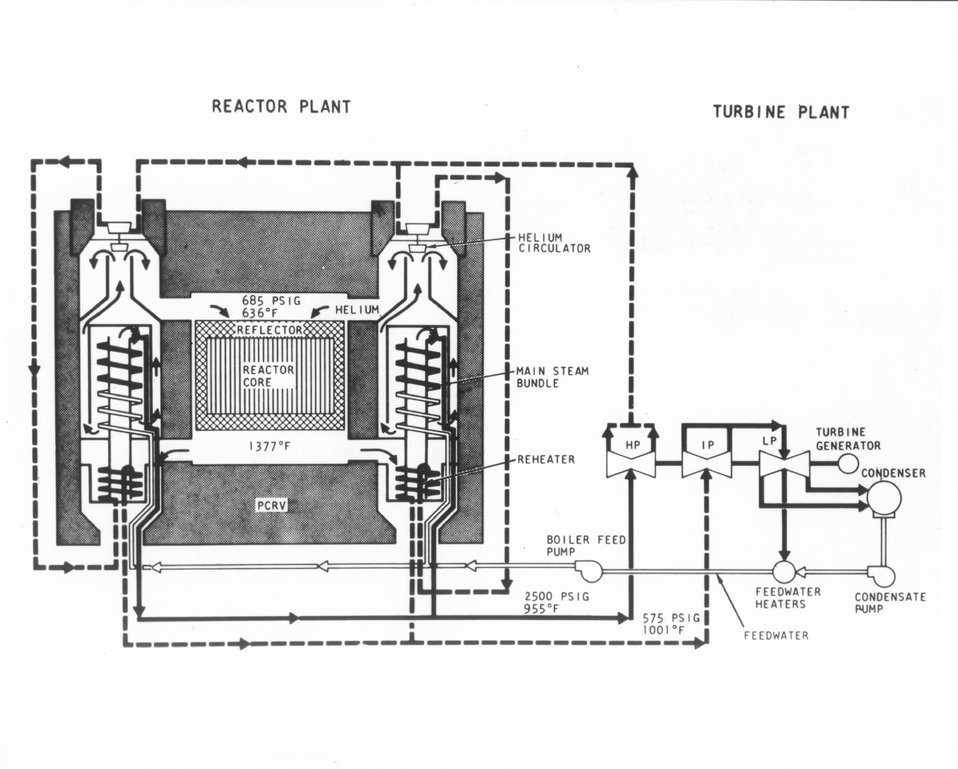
A simplified flow diagram of a 1,100 Move 'steam cycle' High-Temperature Gas-Cooled Reactor. In the 'steam cycle' system, heat is carried by helium from the reactor to a heat ex changer, or steam generator, where the heat is transferred to steam which, in turn, goes through the turbine generator to generate electricity. c. 1974